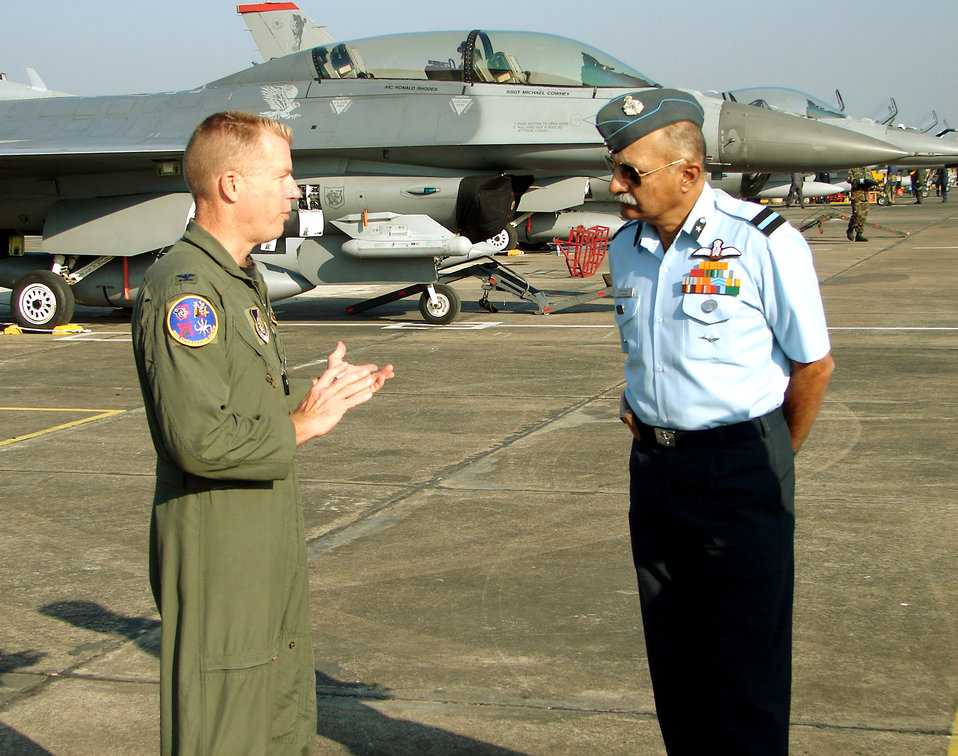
Cope India

KALAIKUNDA AIR STATION, India (AFPN) -- Col. Rusty Cabot talks with Indian air force Gen. B.C. Nanjapa about the capabilities of the F-16 Fighting Falcon. A dozen of the fighters are here from Misawa Air Base, Japan, are here with about 250 U.S. Airmen from five Pacific bases participating in exercise Cope India 06. The exercise aims to strengthen ties and promote interoperability between the two countries' air forces. Colonel Cabot is the deployed forces commander here. .